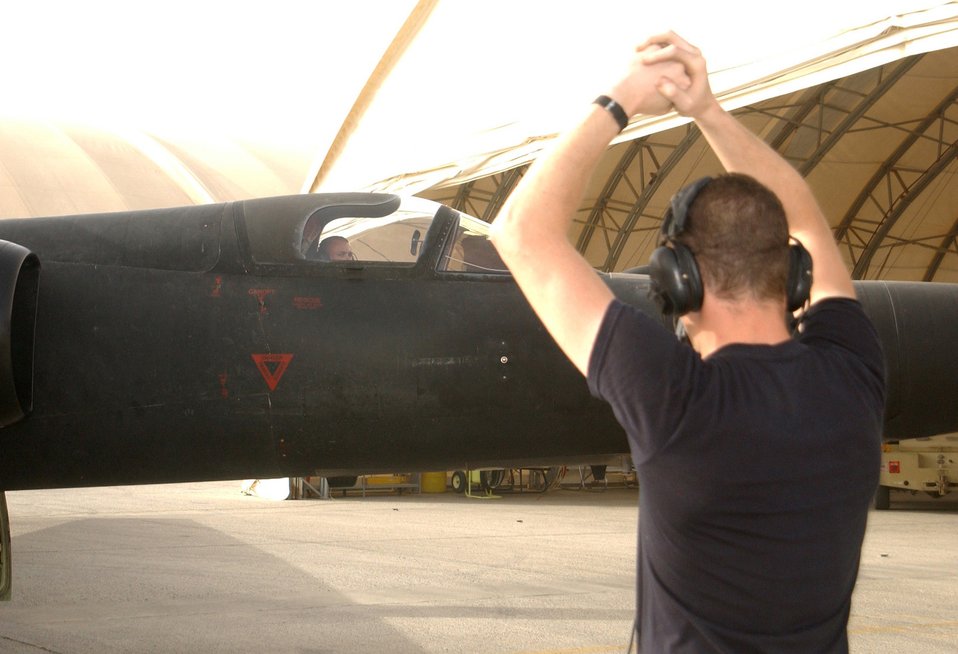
U-2 maintainers boast streaking hot record

Airman 1st Class Justin Emmett gives the signal that air is being fed to start the turbine to Staff Sgt. Nathan Stillwell during a post-mission five-minute idle run test of a U-2